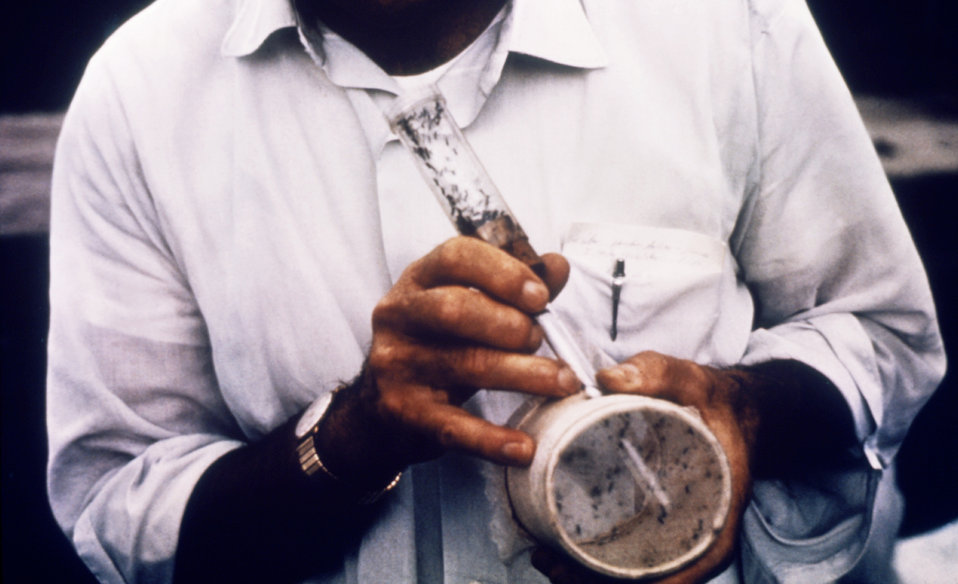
This CDC field researcher is shown discharging mosquitoes from the catch-tube of a hand-held mechanical aspirator.